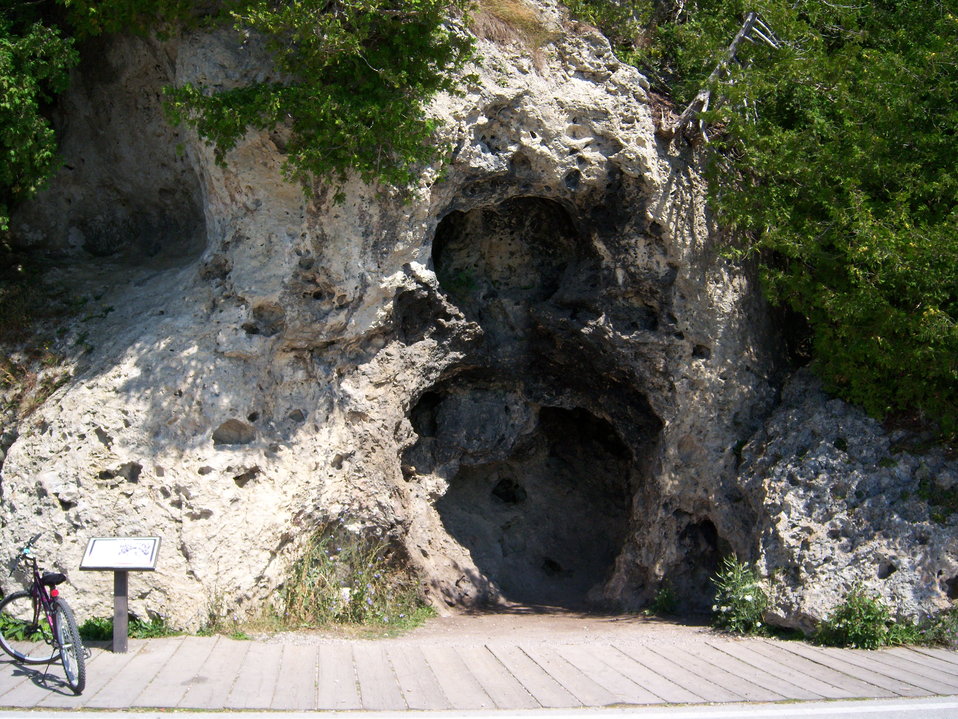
Devil's Kitchen, Mackinac Island Français : Devil's Kitchen (Cuisine du Diable), Île Mackinac, Michigan